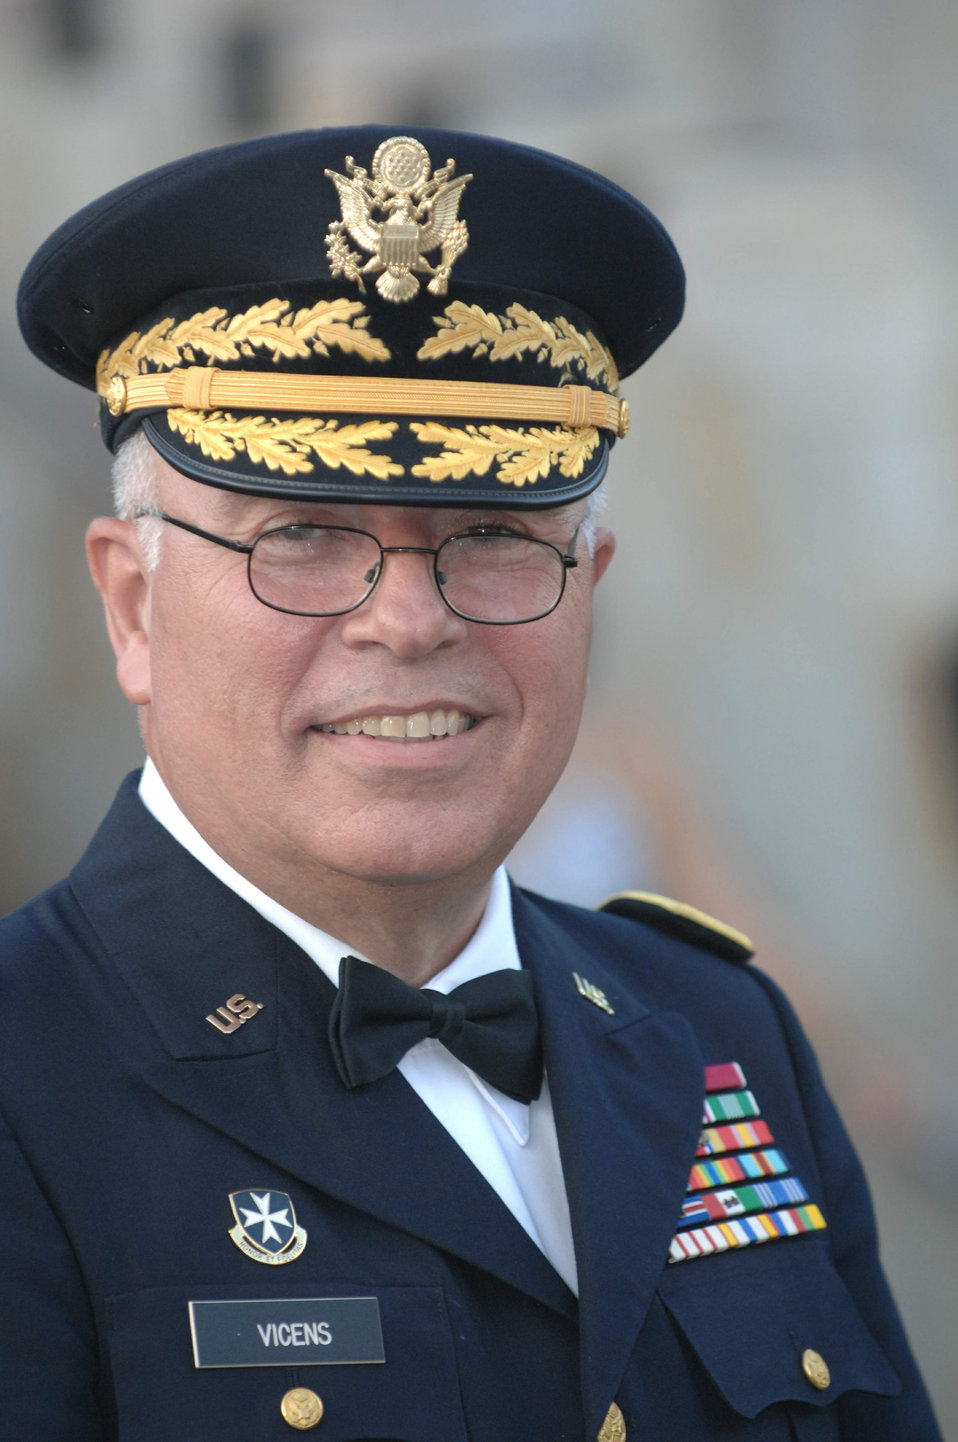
Reservists honor fallen servicemembers

Army Brig. Gen. Antonio J. Vincens attends the Memorial Wreath Laying Ceremony at the El Capitolio 's El Monumento de la Recordacion as part of the 80th League of United Latin American Citizens convention and exposition July 14 at San Juan, Puerto Rico. LULAC is the nation's oldest and largest Hispanic organization advocating for Latinos in the United States. General Vincens is the adjutant general of the Joint Forces Headquarters, Puerto Rico National Guard.